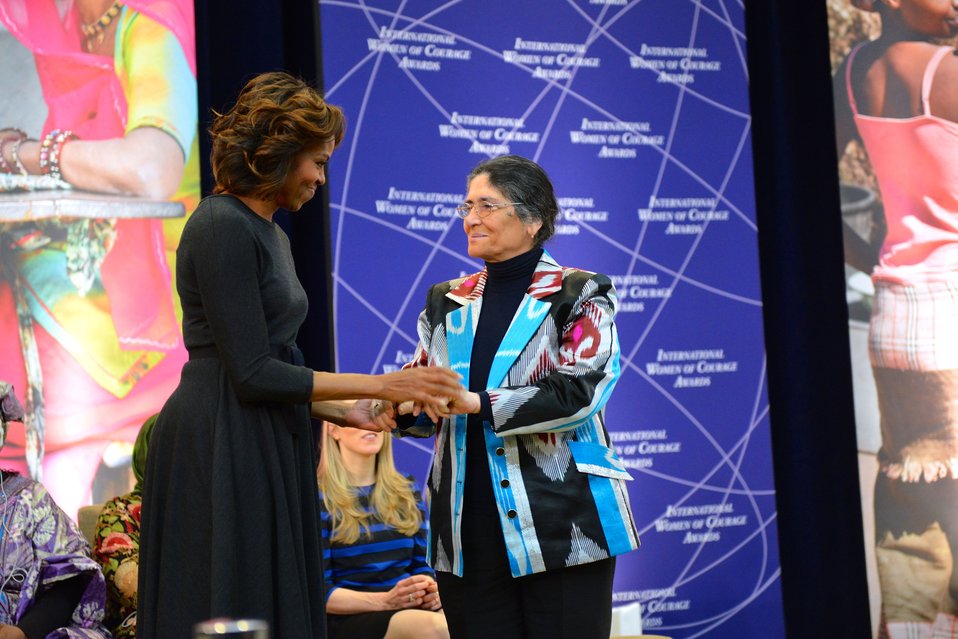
First Lady Michelle Obama Embraces 2014 IWOC Awardee Oinikhol Bobonazarova of Tajikistan

First Lady Michelle Obama embraces 2014 International Women of Courage Awardee Oinikhol Bobonazarova, Director of the NGO Perspektiva Plus in Tajikistan, at the 2014 Secretary of State’s International Women of Courage Award Ceremony at the U.S. Department of State in Washington, D.C., on March 4, 2014.